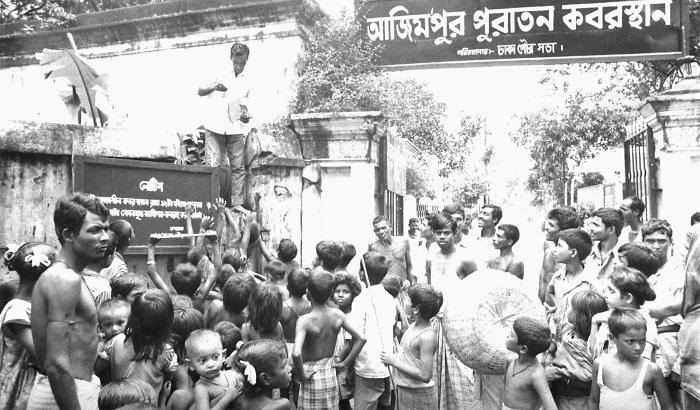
This 1975 photograph depicted a volunteer smallpox eradication team member has he was handing out containing information about smallpox, which included a picture of a child displaying the characteristic maculopapular rash, as well as text pertaining to the cash reward presented to those who had informed the public health authorities of a confirmed smallpox case. Periodic surveys showed that by the end of the program, 80% of the public knew about this cash award.